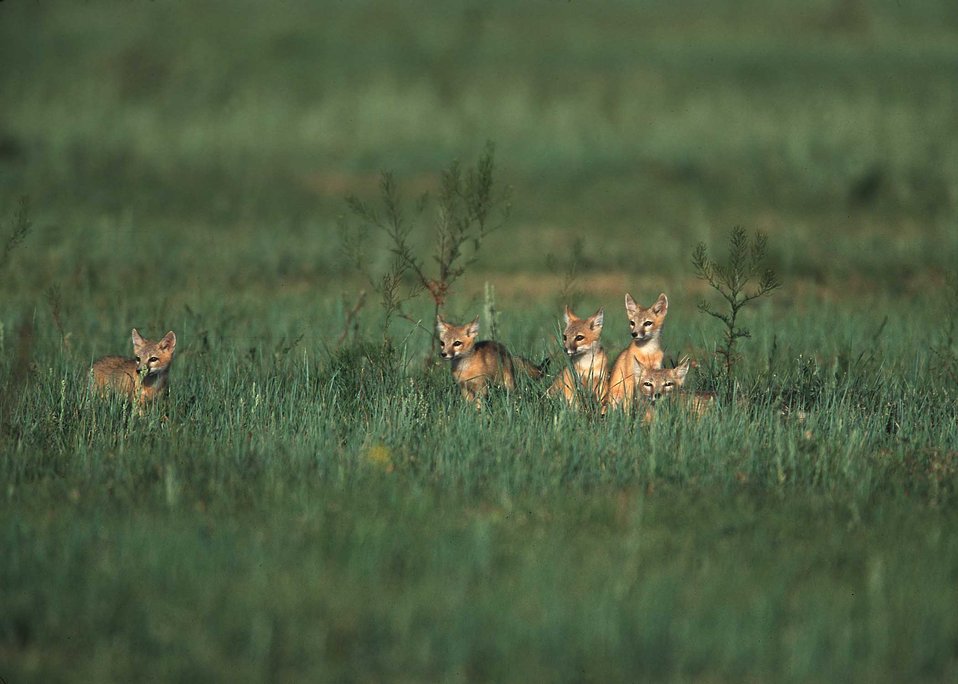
Swift Fox on Pawnee Grassland.